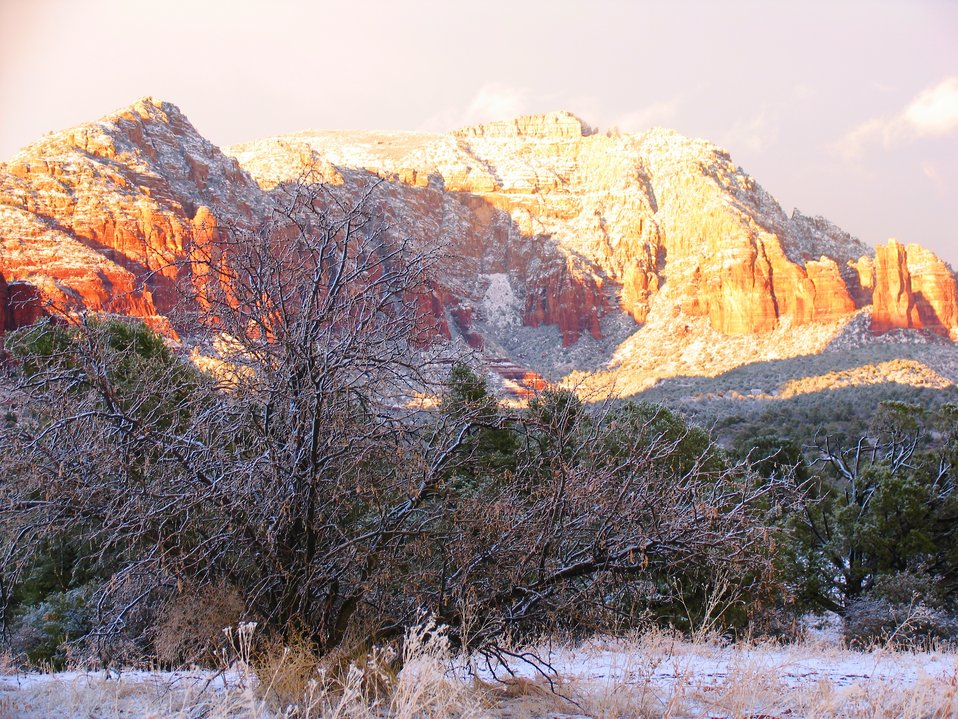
A majestic scene of sandstone mountains dusted with snow and valley oaks and pinion pines